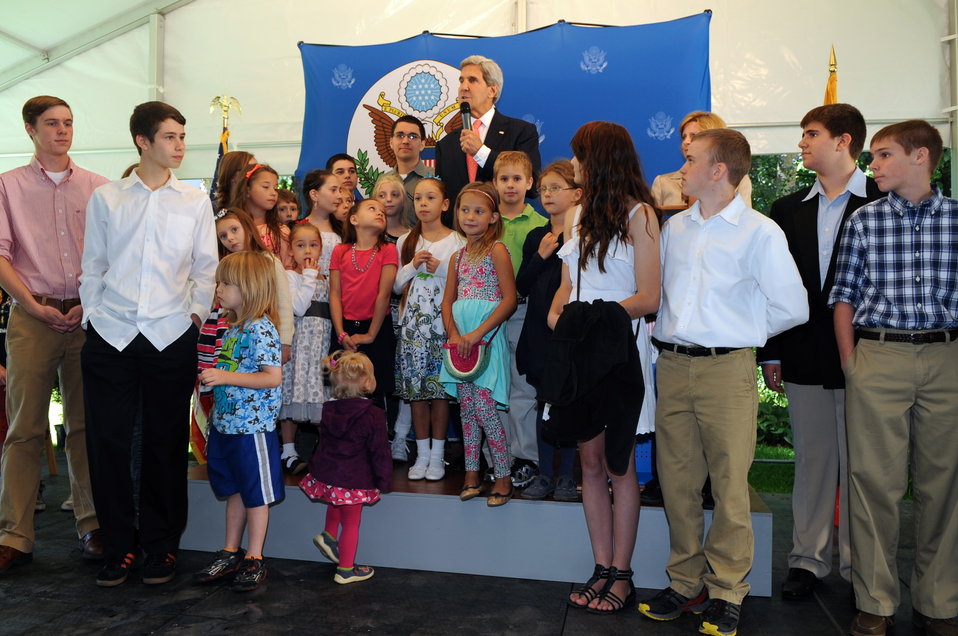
Secretary Kerry Addresses Embassy Vilnius Staff and Families

U.S. Secretary of State John Kerry, joined on stage by the children of staffers, addresses the crowd at U.S. Embassy in Vilnius, Lithuania on September 7, 2013.